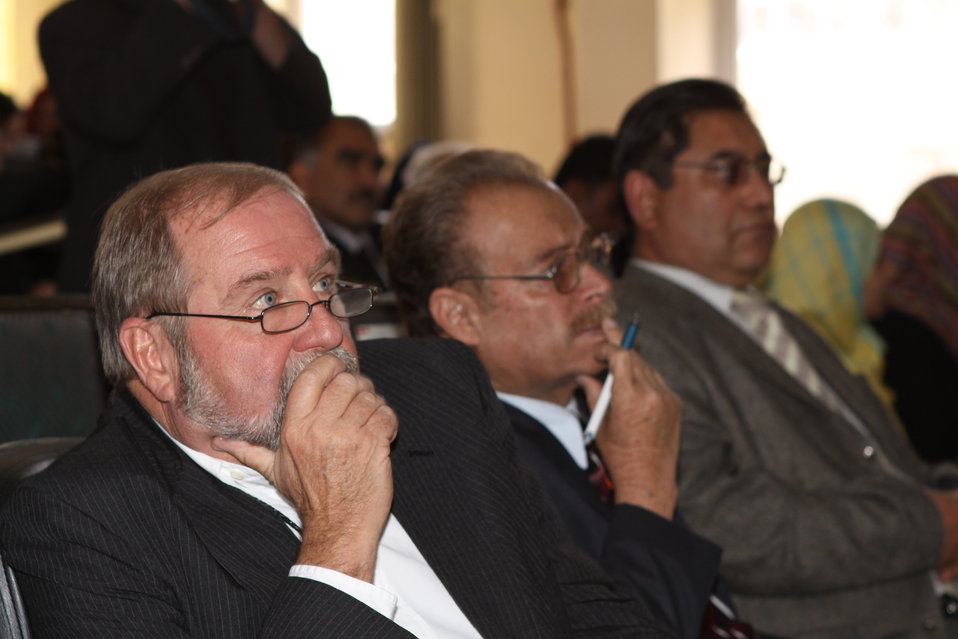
Female University Students Complete Internship

Kabul, Afghanistan | March 16, 2011 – In response to a demand for qualified Afghan engineers, Kabul University celebrated completion of an intensive five-month Mentor Protégé Training Program today by 10 female fourth year university students. The Training Program is a joint effort between the Government of the Islamic Republic of Afghanistan, the U.S. Agency for International Development (USAID), and the Universities of Kabul, Kandahar, Alberoony in Kapisa, Shiekh Zayed in Khost. The graduation ceremony highlighted collaboration with these national institutions in building the technical skills of young Afghans, made possible by USAID.

Four of the interns are engineers, while the remaining six are from the faculties of computer science, economics, and psychology.

Speaking about the event, H.E. Minister of Public Works Abdul Qudus Hamidi said, “The future of Afghanistan lies in developing the skills of our youth, and the engineering skills of these graduates today represent a small but important step forward for the country.”

Keynote speakers at the ceremony included H.E. Deputy Minister of Higher Education Abdul Rahim; USAID Senior Deputy Mission Director Robert Hellyer; and Chancellor of Kabul University Professor Hamidullah Amin. Approximately 150 people, including current and former students attended the graduation.

Launched last year, the Mentor Protégé Training Program has provided qualifying students the opportunity to intern with USAID’s Strategic Provincial Roads-South and East Afghanistan project and gain practical experience in a real work environment. The goal of the program was to offer interns the opportunity to gain hands-on experience to reinforce their formal studies. A total of 30 students from four national universities have benefitted from this program.

“The promotion of women’s rights is integrated into the overall U.S. Government development strategy and can be found in key programs, including education, healthcare, security, rule of law, political participation, agriculture, and economic development,” said Robert Hellyer. “The U.S. Government is committed to the Afghan leadership of programs that directly enhance development, particularly as it relates to women’s issues.”

This event also highlighted the learning achievements of students and emphasized the importance of hands-on internship programs. The curriculum is designed to instill students with the knowledge and confidence to qualify for engineering positions upon completion of their fourth year at their respective universities.